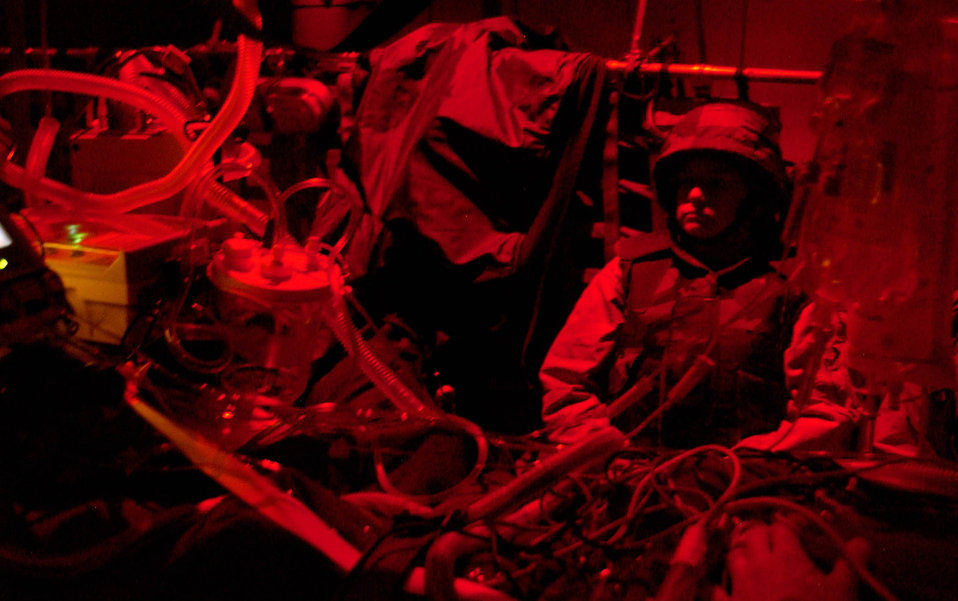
Intensive care in the air

OVER IRAQ -- Dressed in protective vest and helmet, Maj. Kathleen Browning sits at the side of a critically injured patient aboard a C-141 Starlifter medevac mission. She is a nurse who is part of a three-person critical-care air-transport team from Ramstein Air Base, Germany. The team flew the patient from Balad AB, Iraq, to Ramstein. Major Browning is deployed from the 374th Medical Squadron at Yokota AB, Japan.